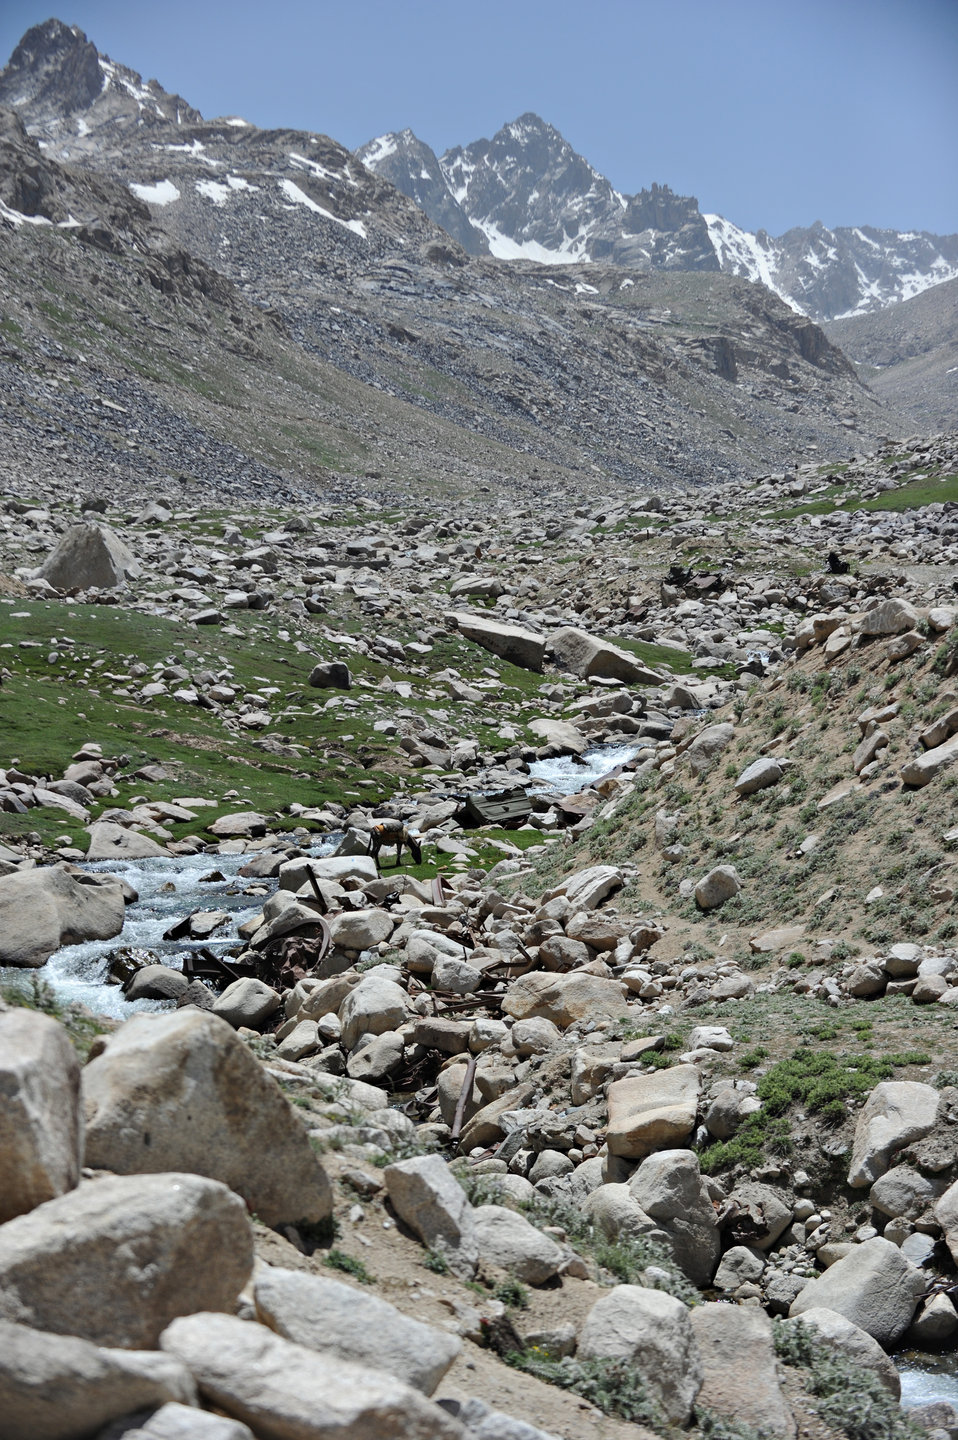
Landscape near the North end o the Salang Tunnel on the border of Parwan and Baghlan Provinces, Afghanistan, on Wednesday, June 15, 2011. (S.K.Vemmer/Department of State)